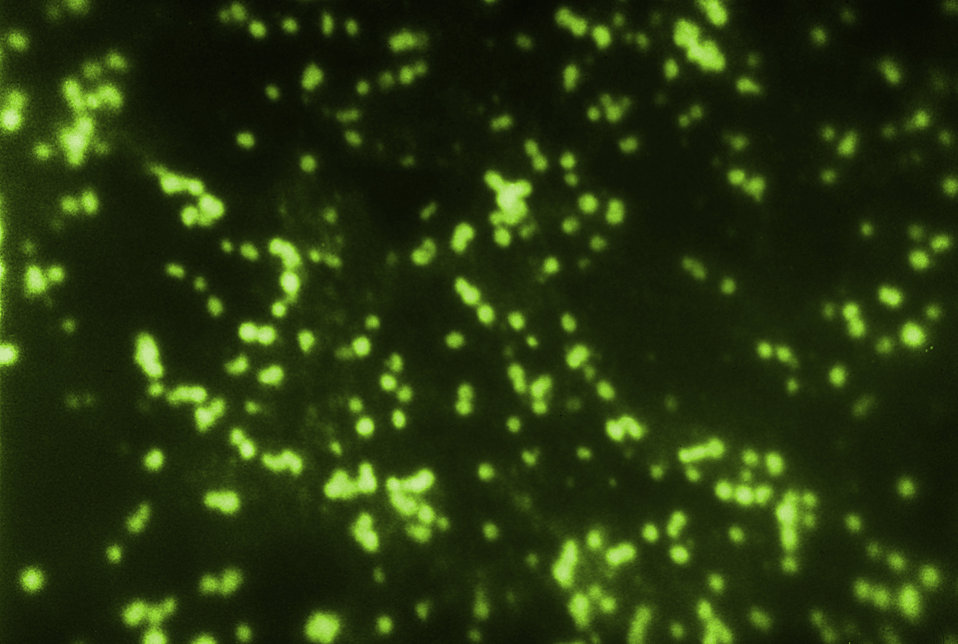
Neisseria meningitidis, group C, in spinal fluid.